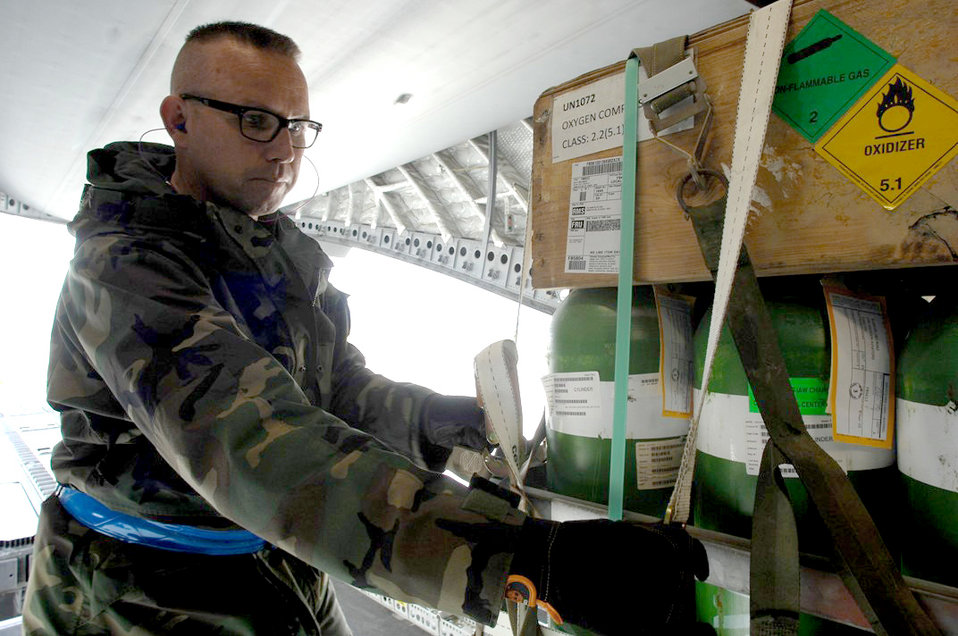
Ramstein member becomes first AF civilian to reach 500 APEX milestone

Kasper Chevalier secures cargo after being loaded into a C-17, Globemaster III June 23, 2010 at Ramstein Air Base, Germany. Mr. Chevalier is an aerial porter in the 721st Aerial Port Squadron.